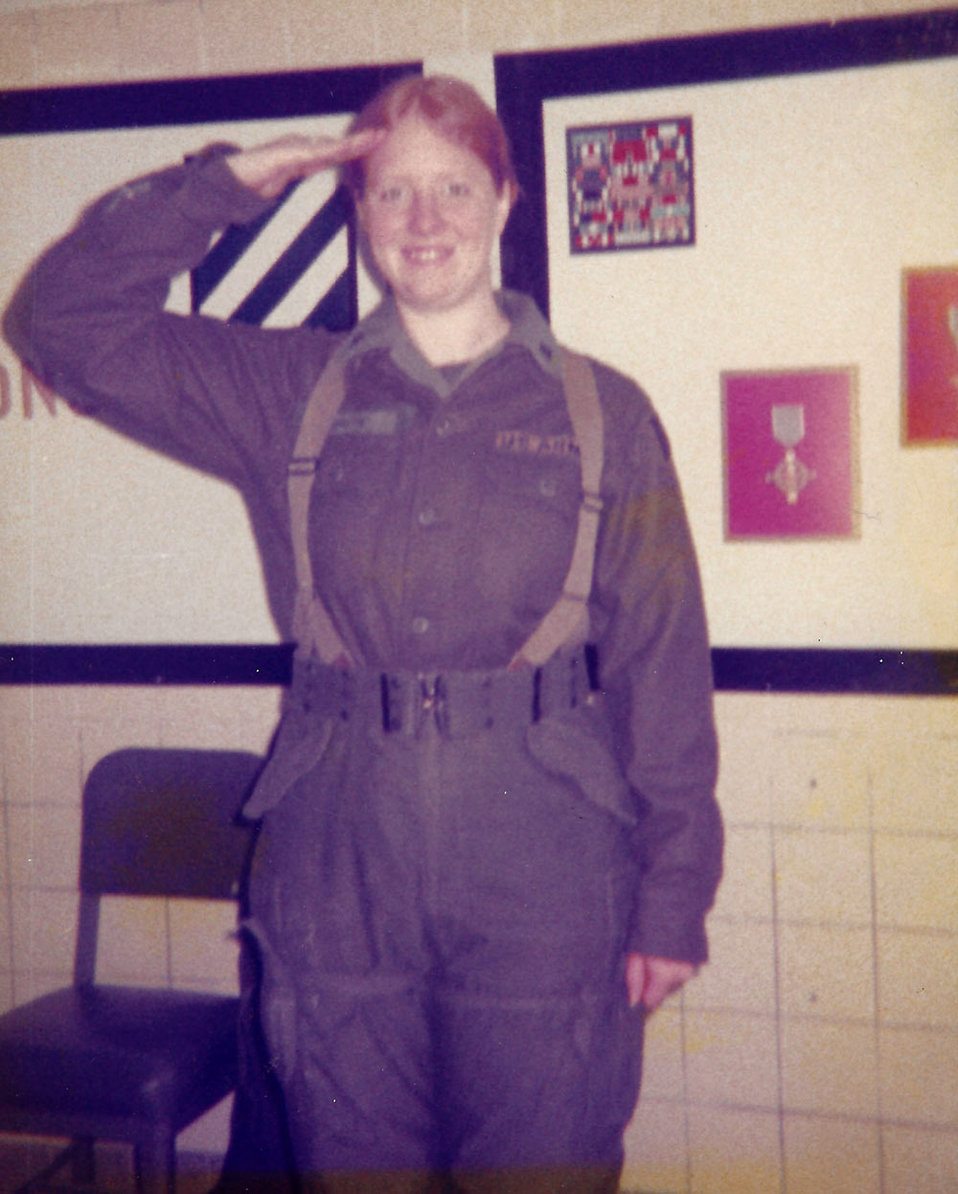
Mindy White Mountain-Prairie Region

Mindy White, Budget Specialist at Bear River Migratory Bird Refuge in Utah says, “I am as proud of my time in the Army serving my country, as I am working for the mission I so passionately believe in with the FWS.”